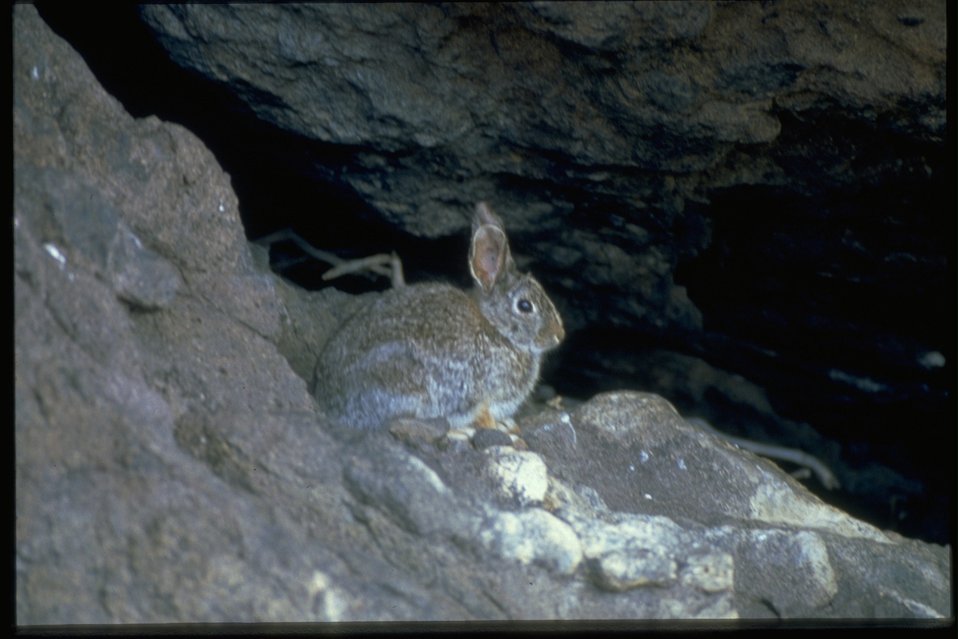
A cotton-tail rabbit sitting on a rock near a small stream.